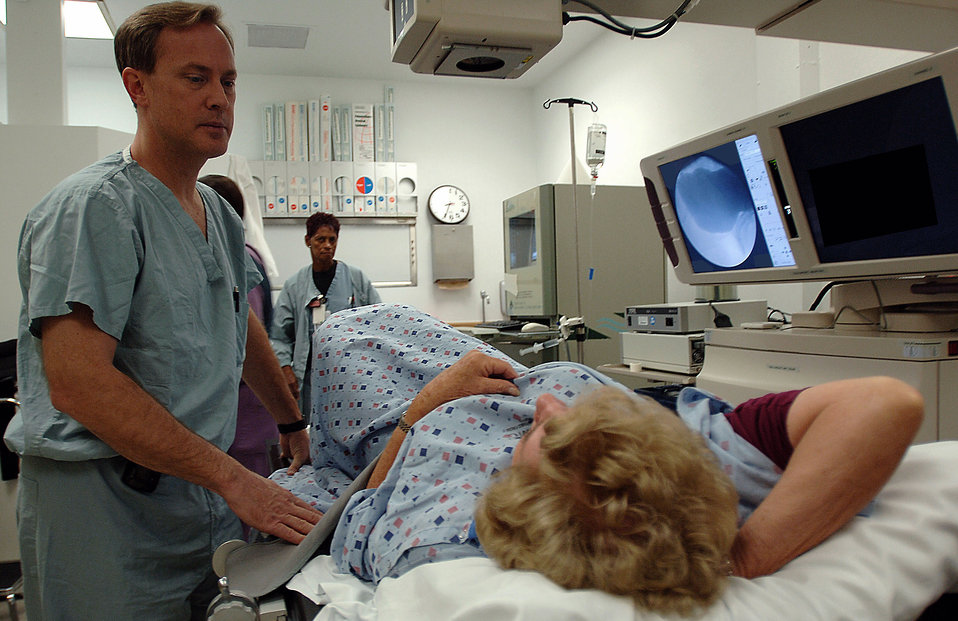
Botox treatment provides relief for bladder problems

Col. (Dr.) Duane Cespedes conducts a urodynamic study on a patient in the Wilford Hall Medical Center Urology Department. The study helps evaluate the cause of incontinence. Doctor Cespedes is the director of the Wilford Hall Incontinence Clinic.